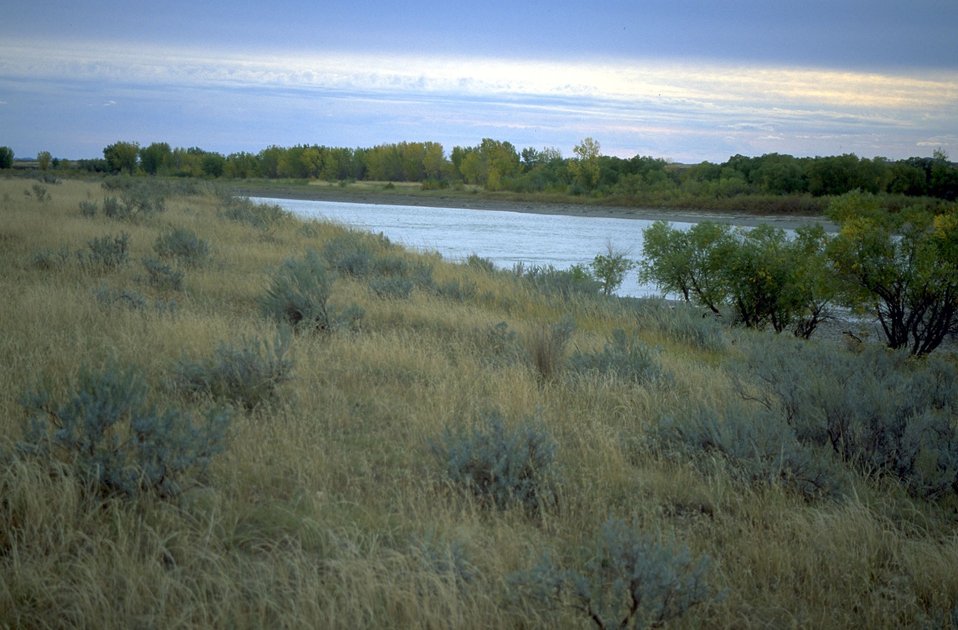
Sagebrush along the Yellowstone River